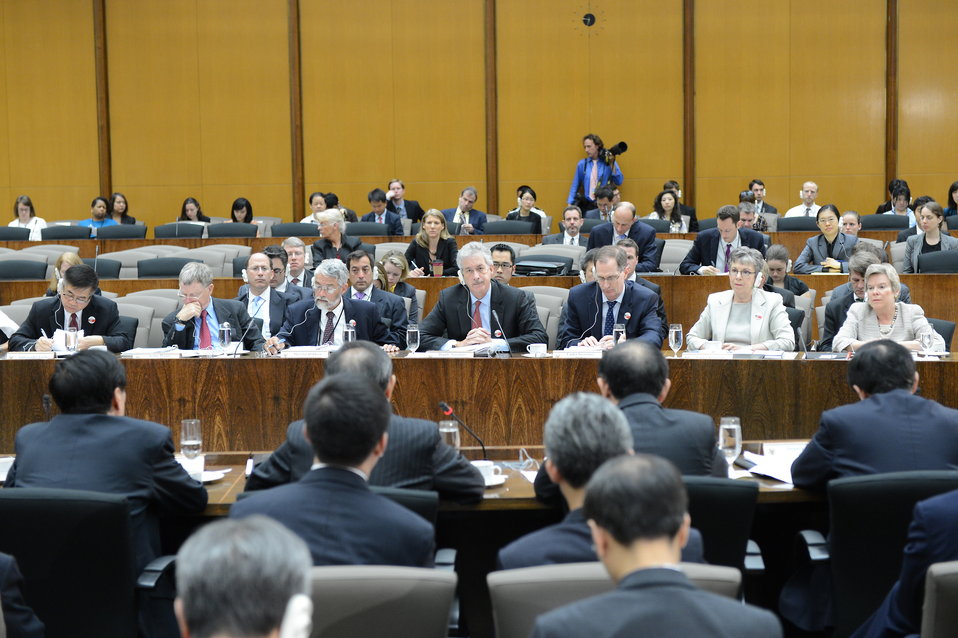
Deputy Secretary Burns and Chinese State Councilor Yang Participate in the Strategic Track Plenary Session

U.S. Deputy Secretary of State William Burns and Chinese State Councilor Yang participate in the Strategic Track Plenary Session during the U.S.-China Strategic and Economic Dialogue in the Loy Henderson Auditorium at the U.S. Department of State in Washington, D.C., on July 11, 2013.